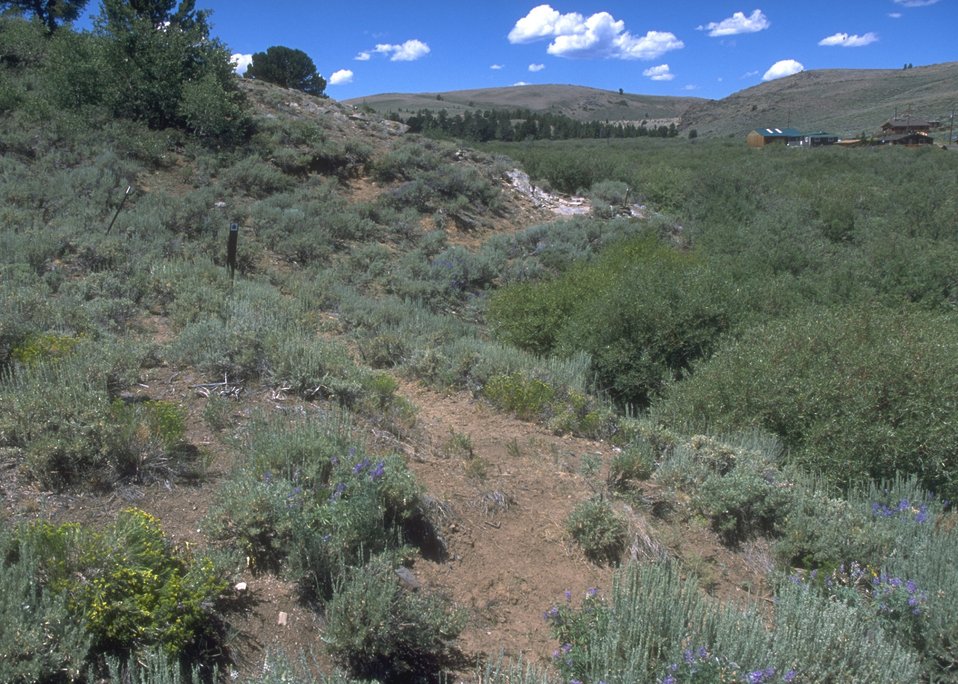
Continental Divide Trail near South Pass City, Lander Field Office.